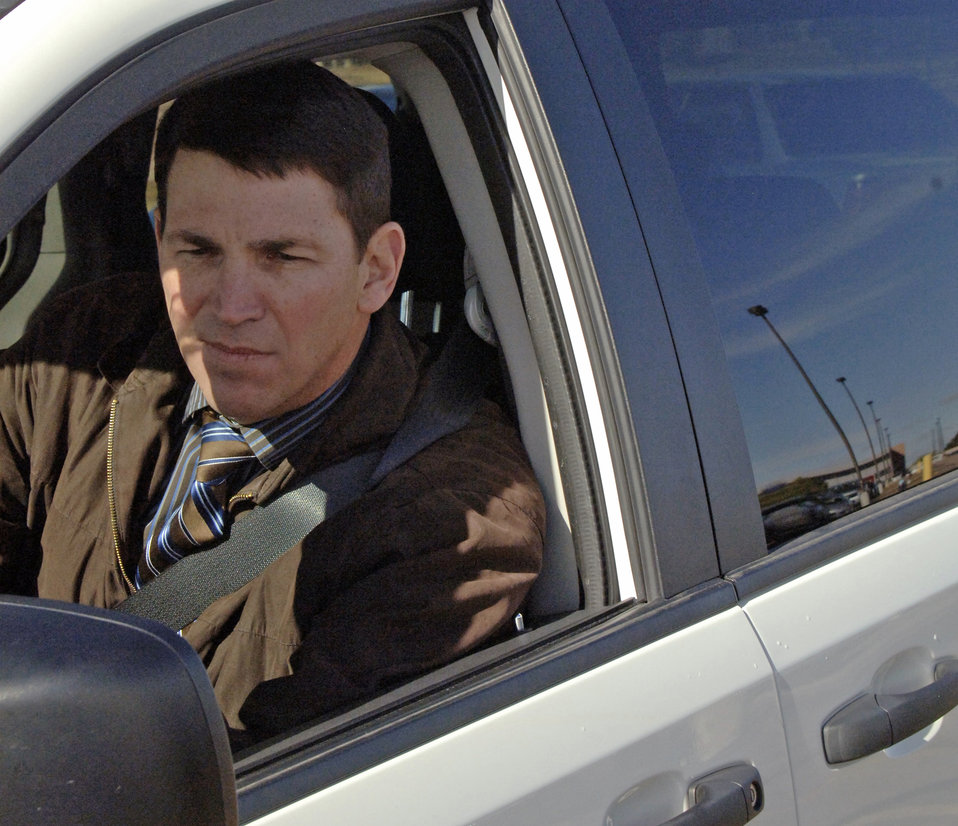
Schriever commuter-van pool

Paul Pabich, the primary driver for his neighborhood commuter van pool, maneuvers through an on-base parking lot Nov. 1, 2010, at Schriever Air Force Base, Colo. Mr. Pabich shares the van pool with five of his neighbors who also work on base.